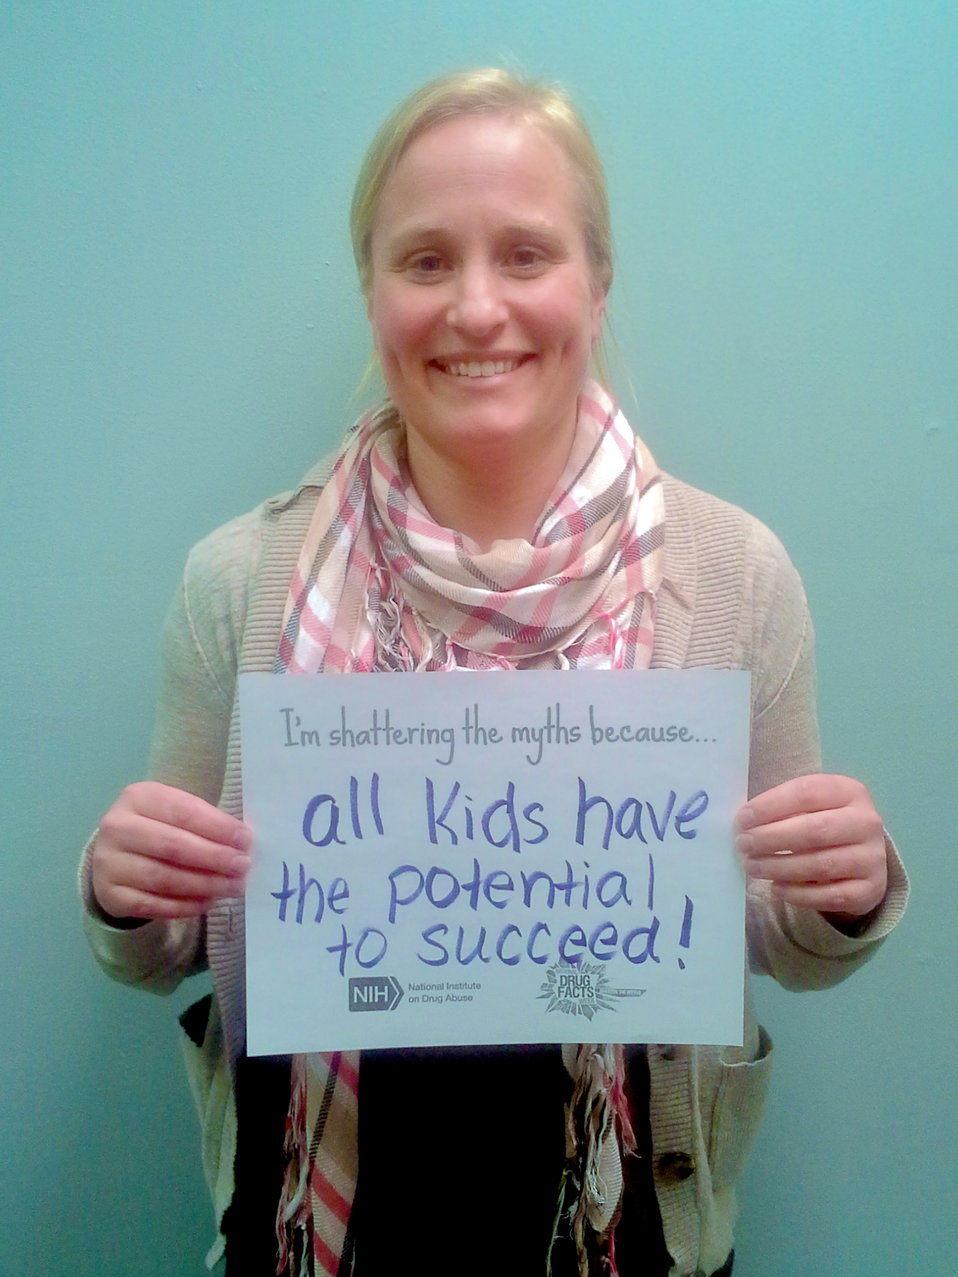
Shattering the Myths campaign in Winona, Minnesota